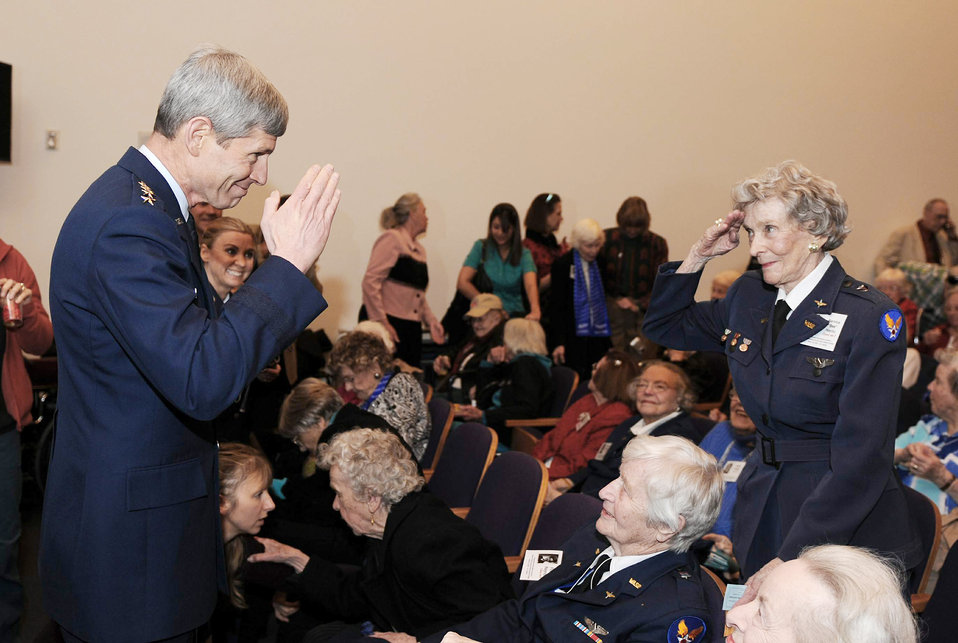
Female WWII pilots lay wreath at Air Force Memorial

Chief of Staff of the Air Force Gen. Norton Schwartz returns a salute from Bernice